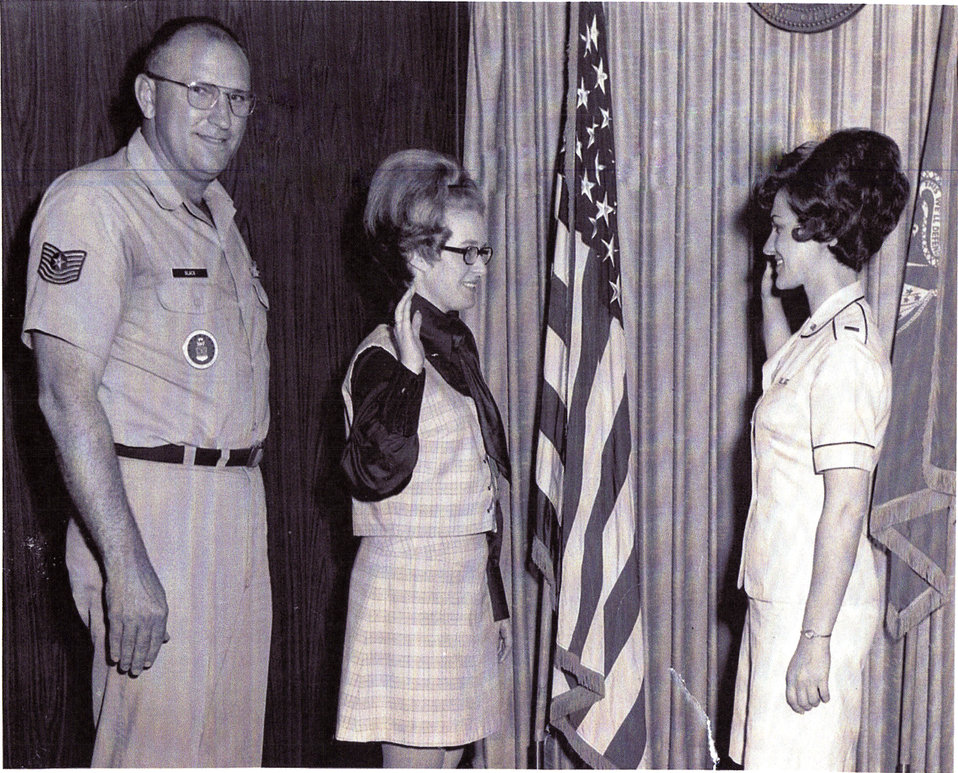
Donna Lakamp USAF induction

Donna Lakamp in Region 6 served in the Air Force.